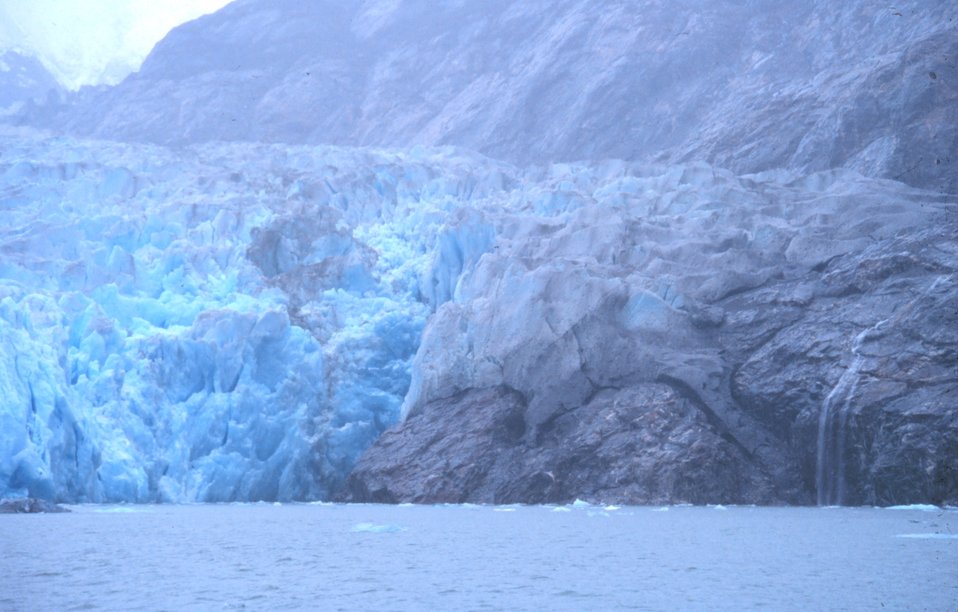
The Sawyer Glacier at the head of Tracy Arm Fjord